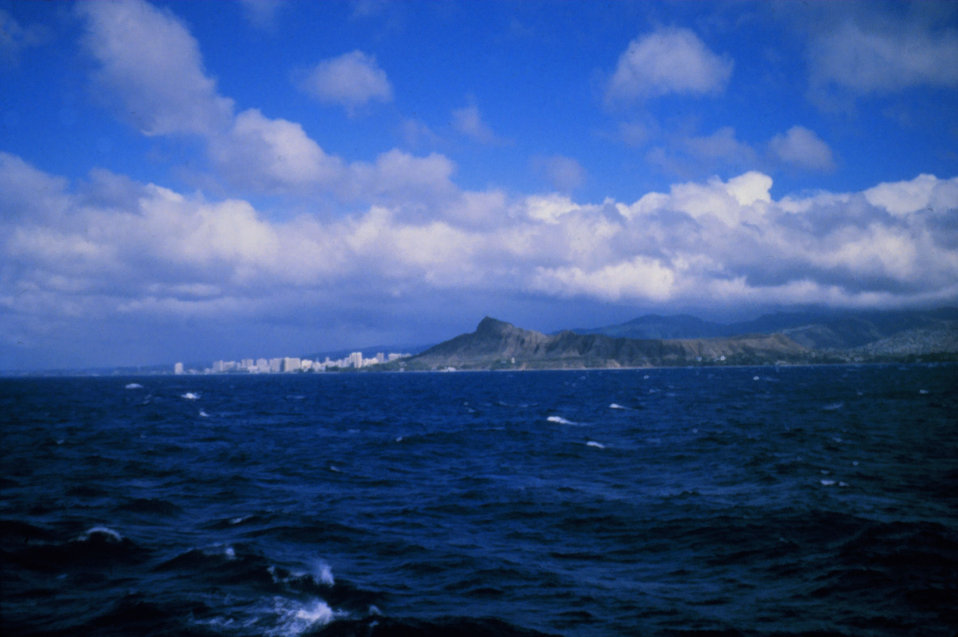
Fair weather cumulus